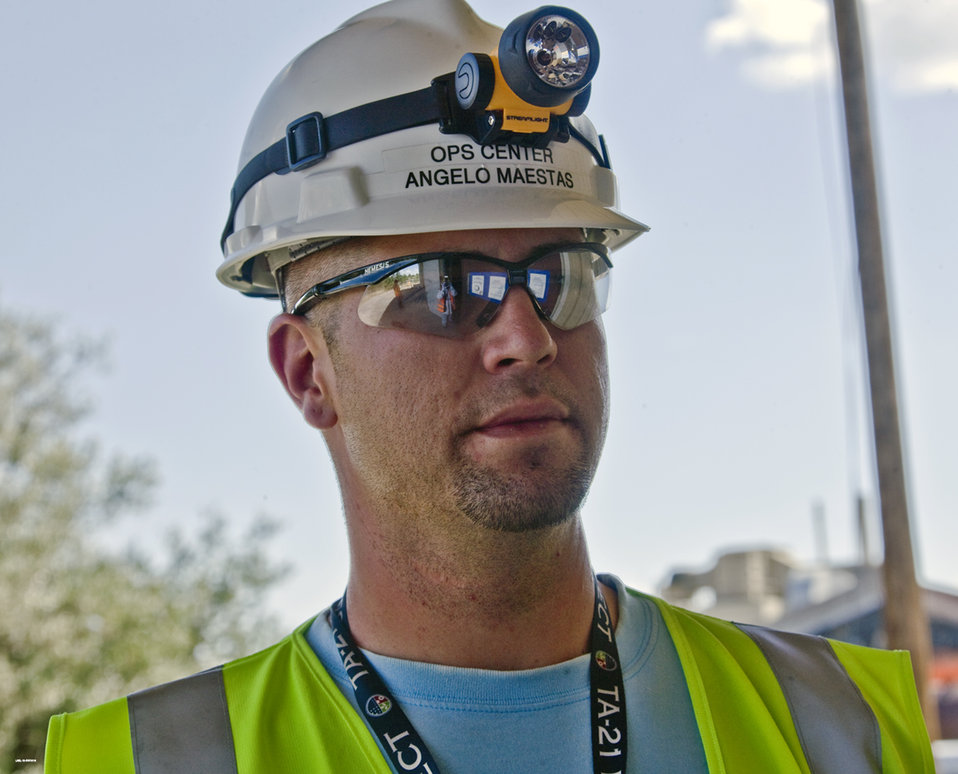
Angelo Maestas

An Española, N.M., native and electrician, Maestas was unemployed for about three months before being hired at the Technical Area 21 (TA-21) Recovery Act project operations center at Los Alamos National Laboratory.